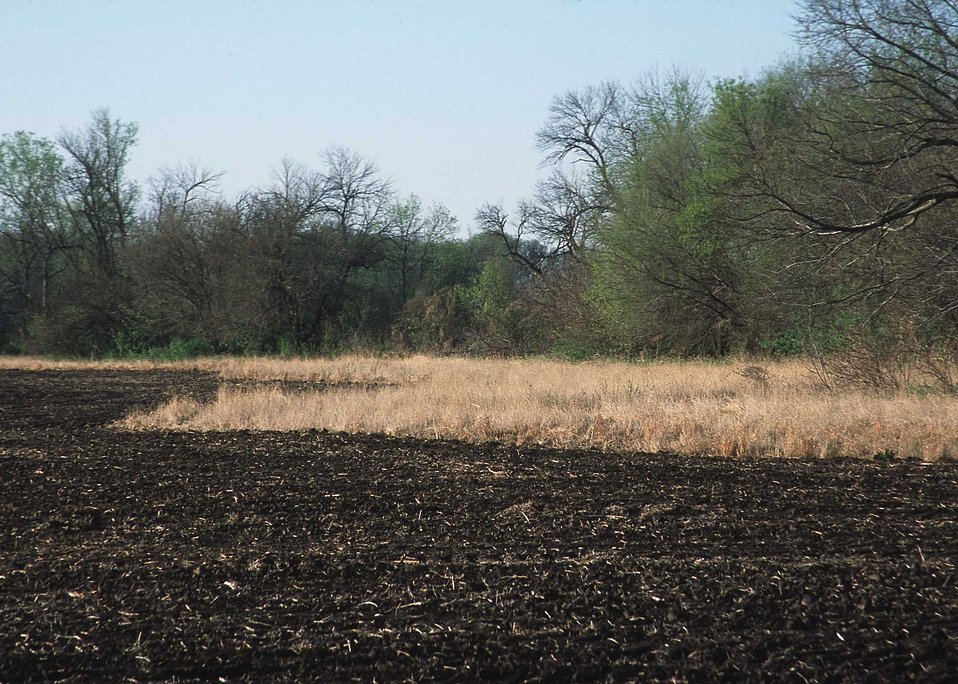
Conservation buffers seeded to Prairie grasses border riparian habitat and a cultivated field. Kansas.